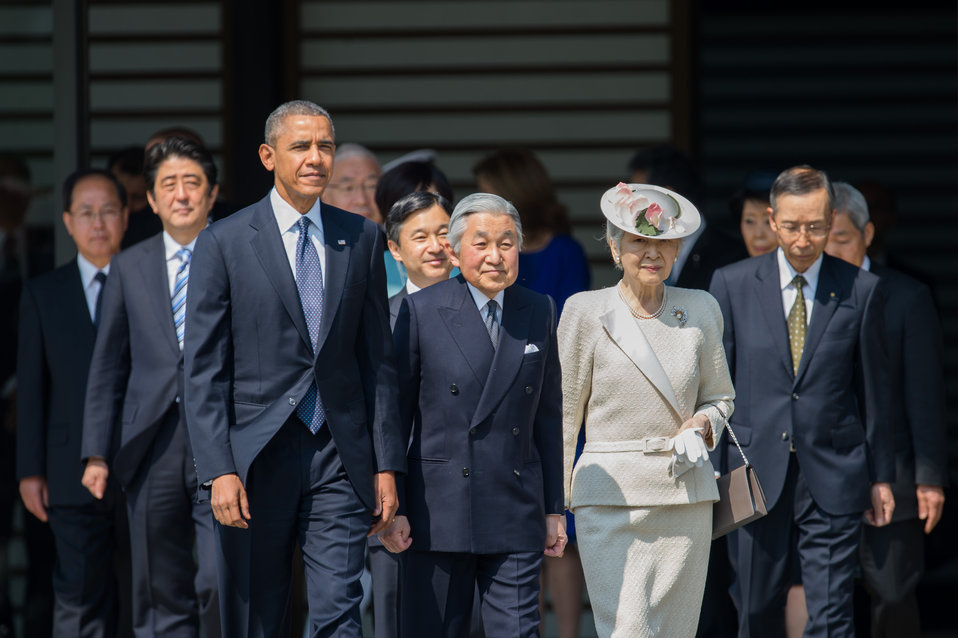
President Obama at the Welcome Ceremony in Japan

U.S. President Barack Obama participates in the welcome ceremony with their Majesties the Emperor and Empress of Japan, His Imperial Highness Crown Prince Naruhito, and Japan’s Prime Minister Shinzo Abe at the Imperial Palace during his state visit to Tokyo, Japan, on April 24, 2014.